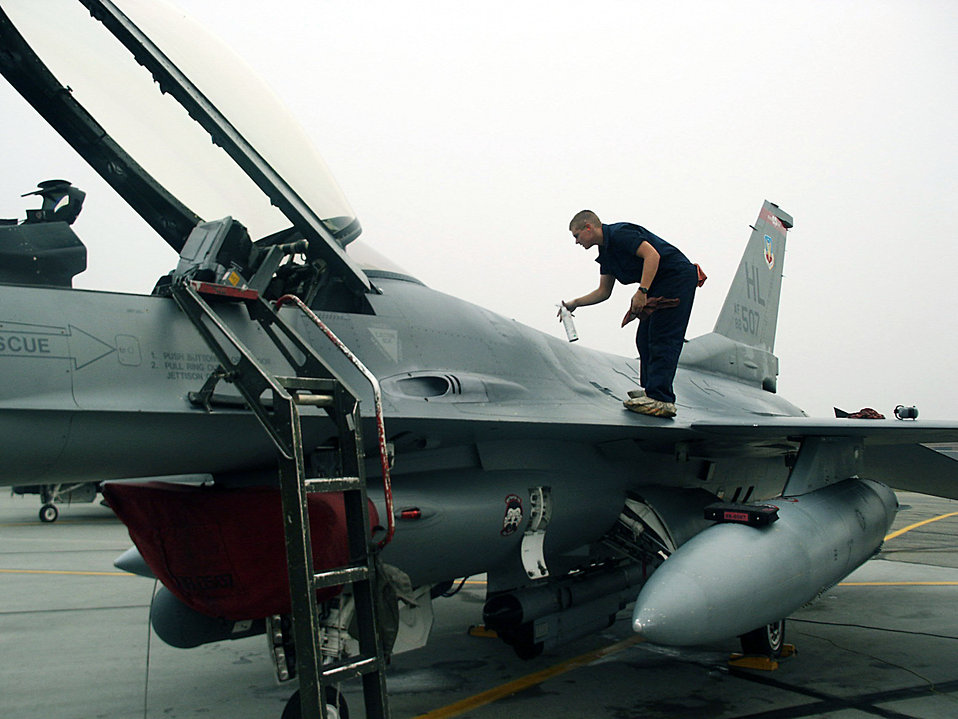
Cope Thunder trains warfighters

EIELSON AIR FORCE BASE, Alaska -- Staff Sgt. Corey Lobdell wipes down an F-16 Fighting Falcon before a flight here Aug. 19 during Cope Thunder 04-02. Sergeant Lobdell is a crew chief with the 34th Fighter Squadron from Hill Air Force Base, Utah.